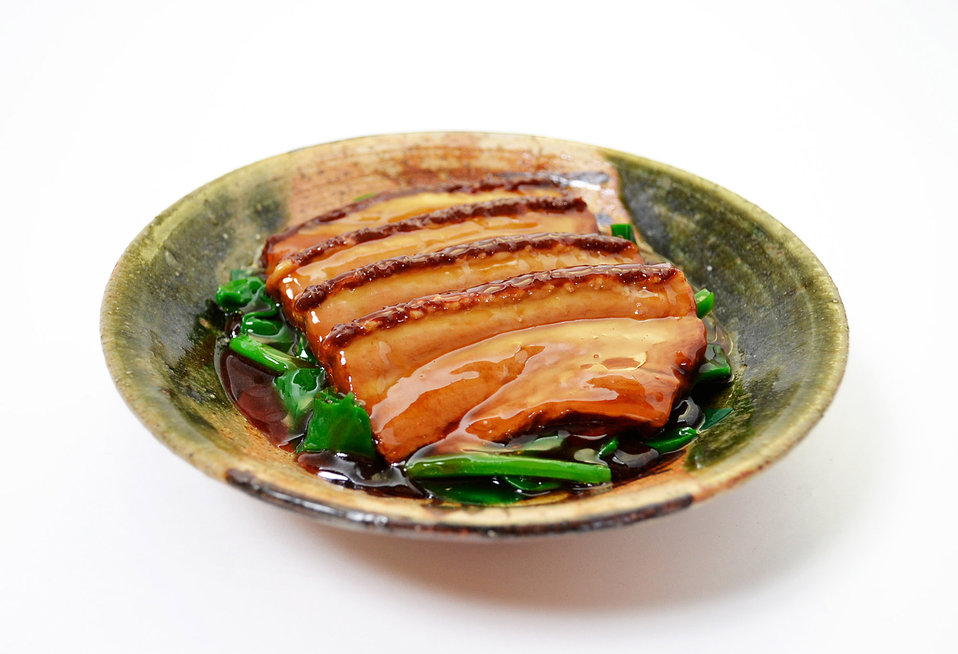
Dong po rou(chinese food).